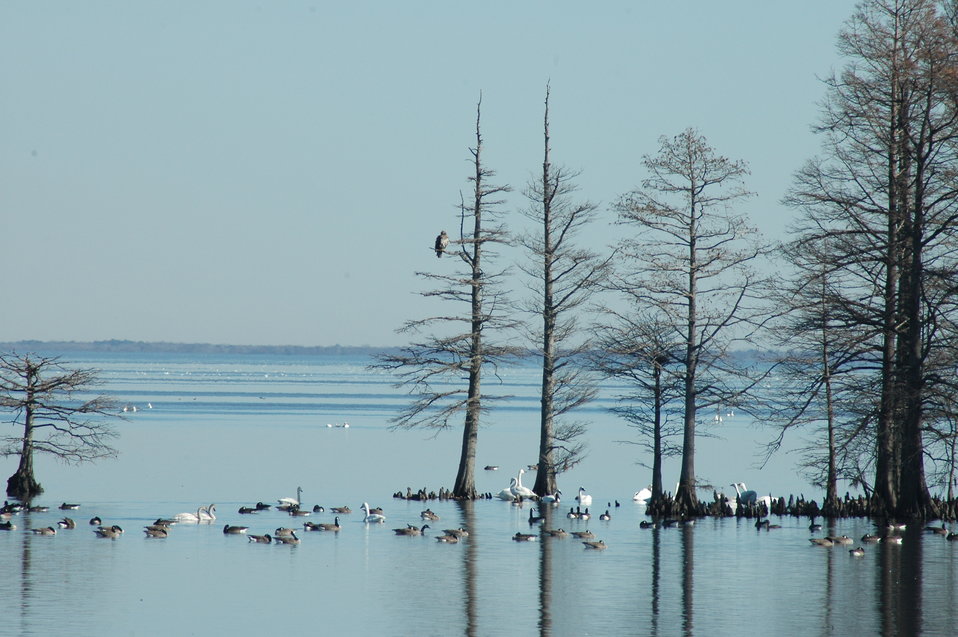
Raptor and waterfowl

A raptor sits in a tree above dozens of waterfowl on Lake Mattamuskeet at Mattamuskeet National Wildlife Refuge.